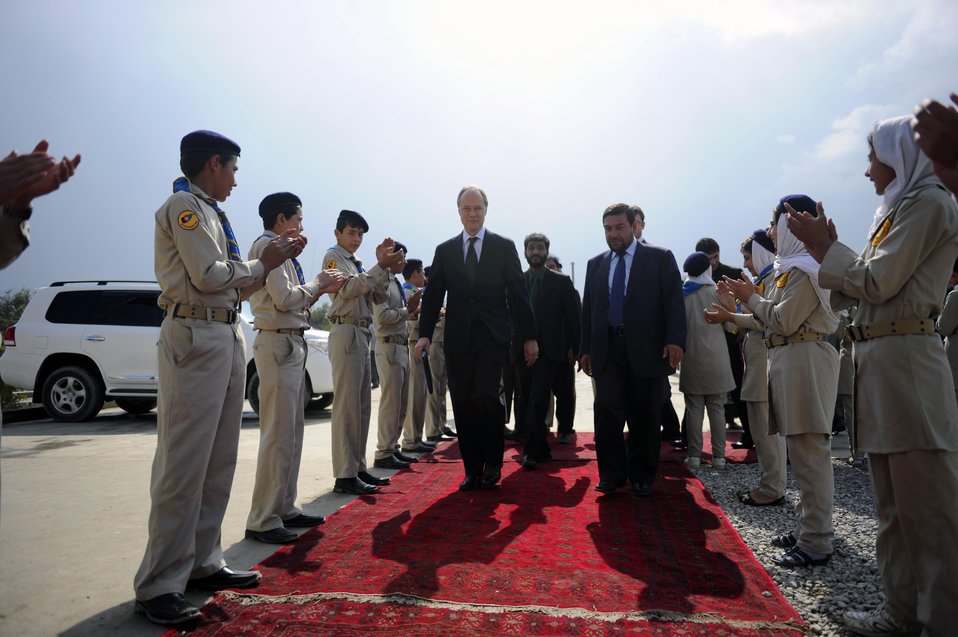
U.S. Deputy Ambassador James B. Cunningham enters the Ghazi School in advance of the official inauguration.

U.S. Deputy Ambassador to Afghanistan James B. Cunningham, Afghan Minister of Education Abdul Rahim Wardak and visitng former U.S. Ambassador to Afghanistan Zalmai Khalilzad officially inaugurated the newly rebuilt Ghazi High School in West Kabul October 23, 2011. Former alumni of the school include both Ambassador Khalilzad and Afghan President Hamid Karzai. The school was destroyed during 30 years of fighting in Afghanistan, and was refurbished by the U.S. Agency for International Development. (Department of State)